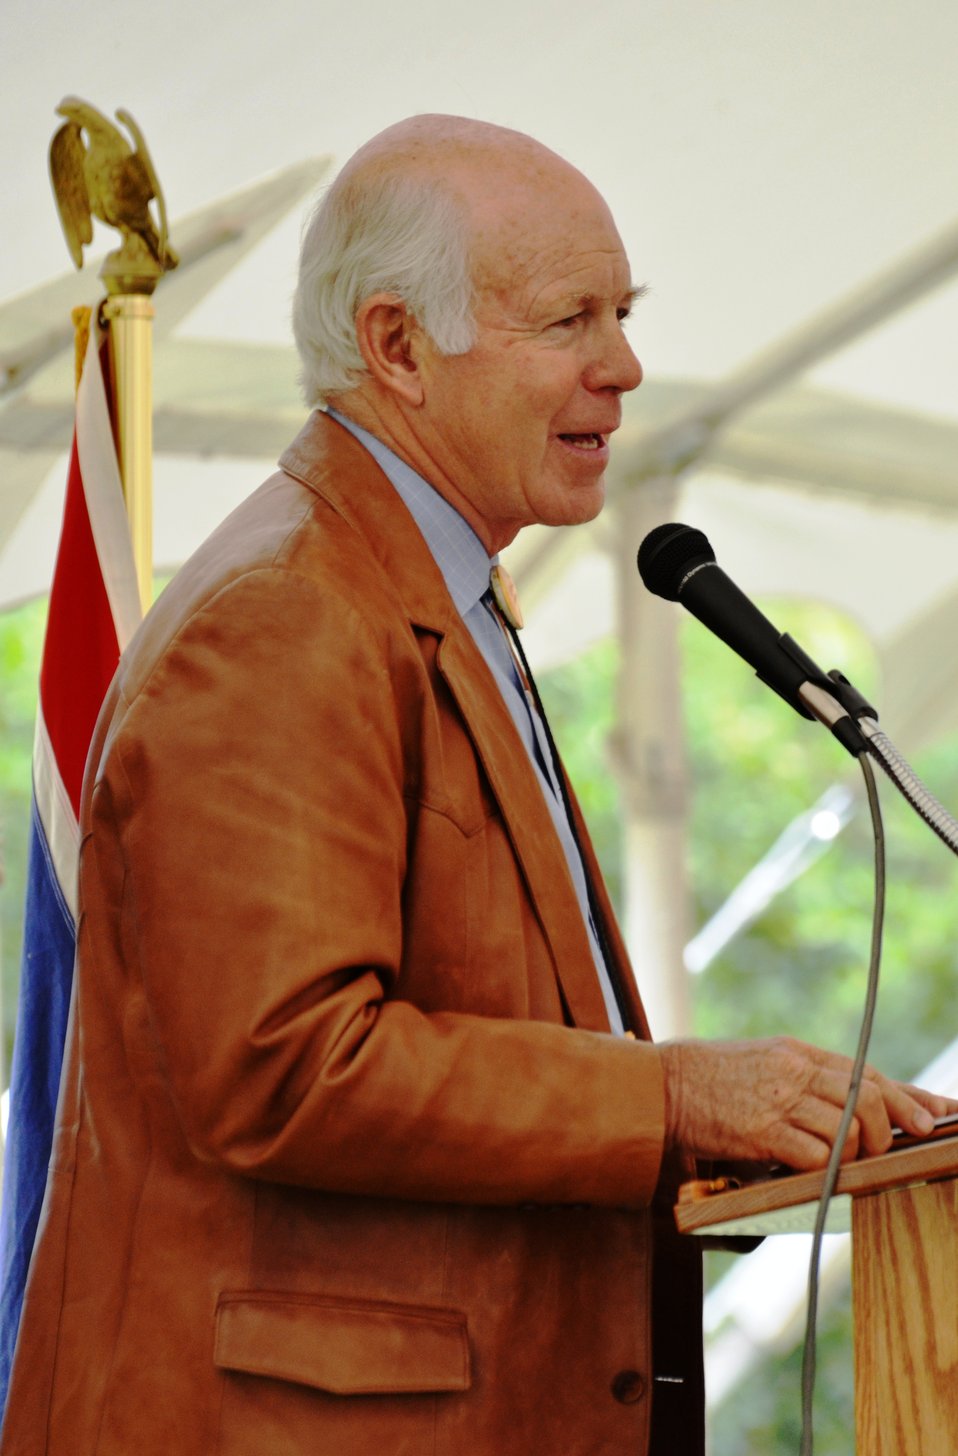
Former USFWS Director John Turner as MC

Former USFWS Director John Turner, who lives in the Jackson, Wyoming area, served as Master of Ceremonies for the National Elk Refuge's centennial ceremony on August 10.

Credit: USFWS / Bobby Harkey, National Elk Refuge volunteer